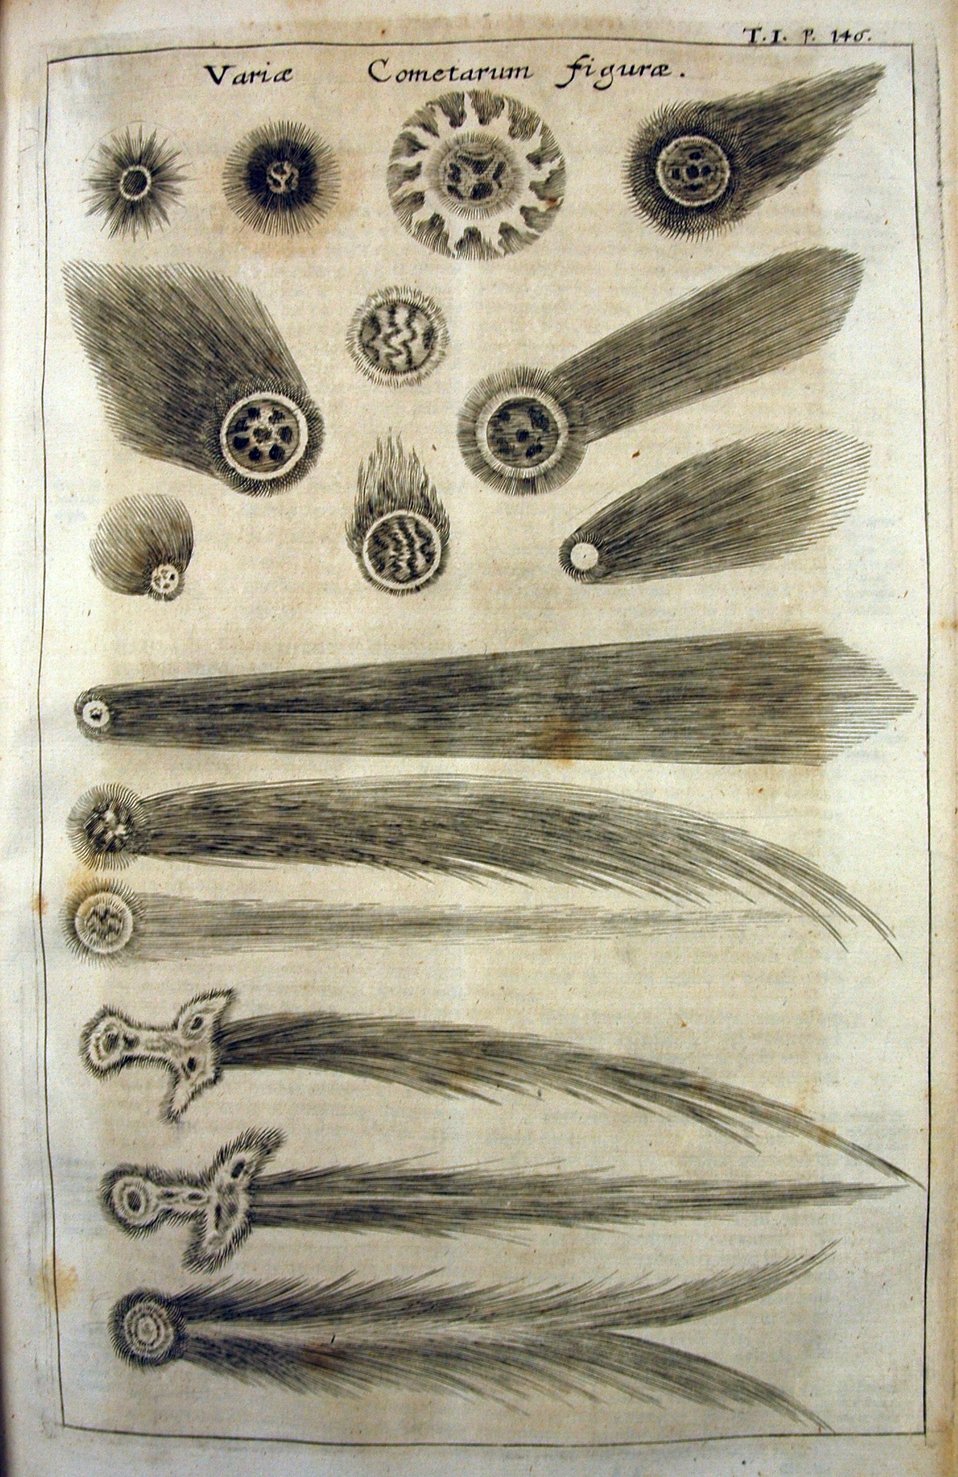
'Specula physico-mathematico-historica....' by Johann Zahn, 1696. Library Call No. Q155 .Z33 1696. Aspects of a comet relative to the sun.